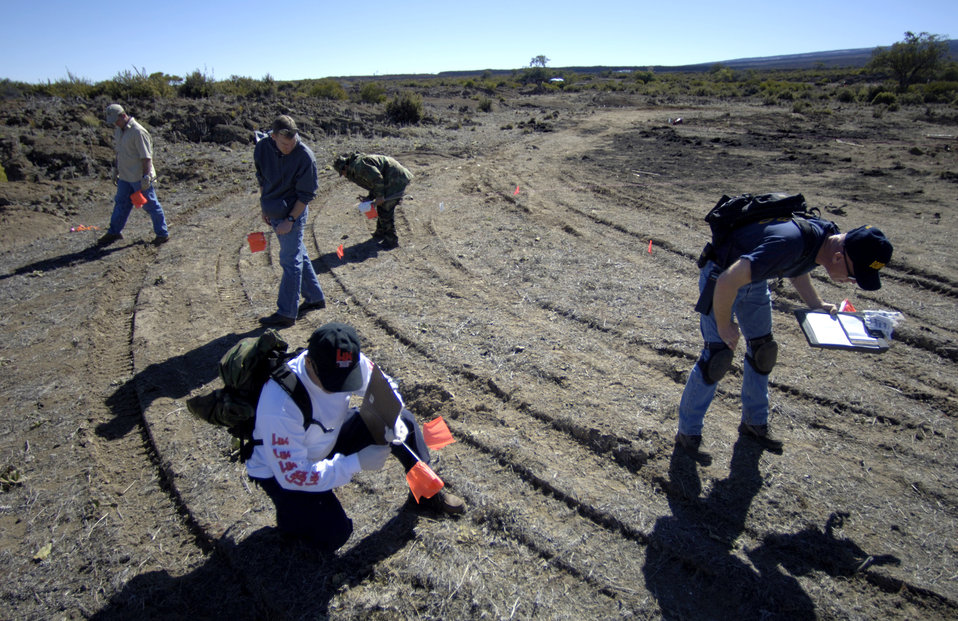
Air Force attends FBI training

POHAKULOA TRAINING AREA, Hawaii (AFPN) -- Students search for and mark evidence at a bomb scene scenario. The FBI, along with Army cadre, conducted a large vehicle post blast investigator's course here. It included instruction on investigative techniques and evidence collection.